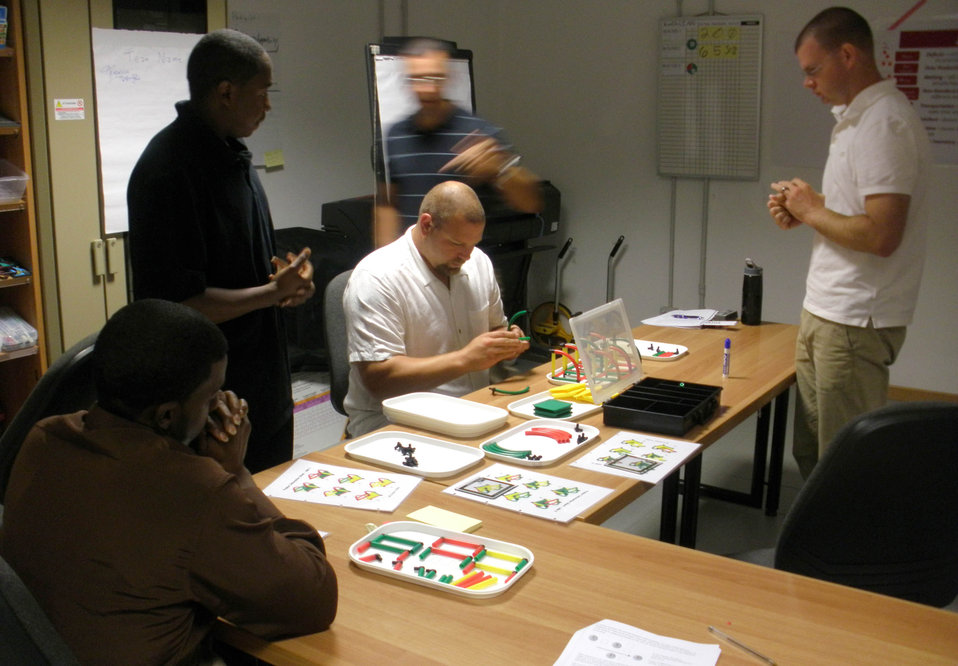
KanDo Lean class

Airmen participate in a widget-building exercise during a KanDo Lean class Sept. 11, 2009, at Aviano Air Base, Italy. The class, which is offered through the Air Force Smart Operations 21 office here, allows attendees to receive training in a team-based environment to discover how to remove waste from a simulated process and relate that to what they do every day through active execution and discussion.